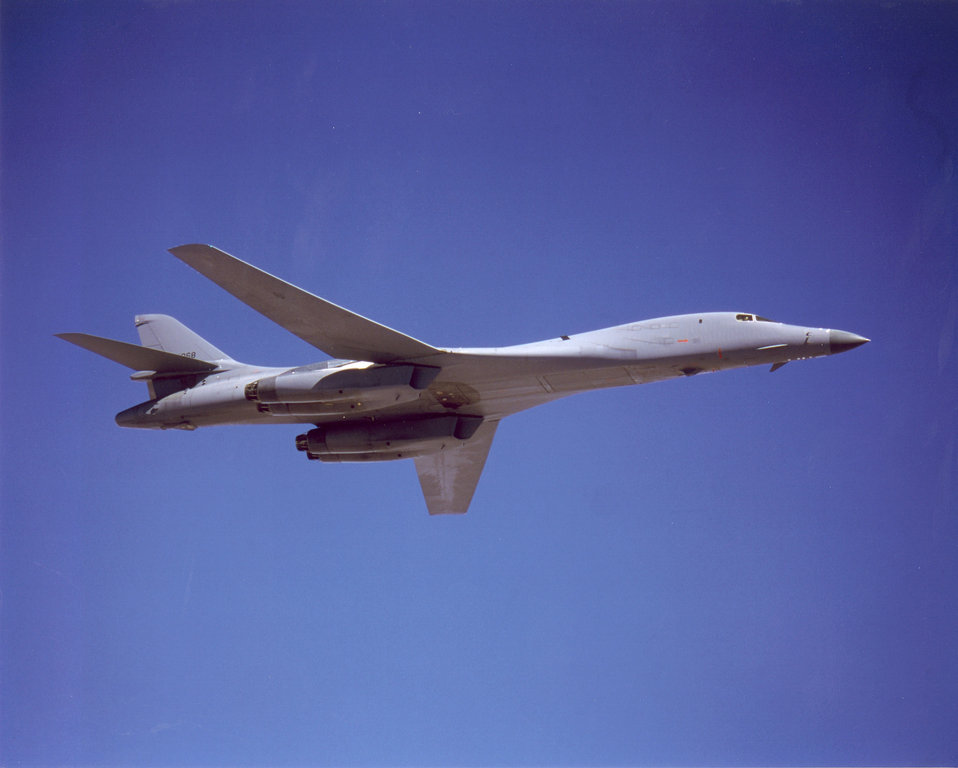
B-1 Lancer upgraded munitions

The B-1B Lancer continued to be enhanced throughout the 1980s and 90s; especially with precision-guided munitions.